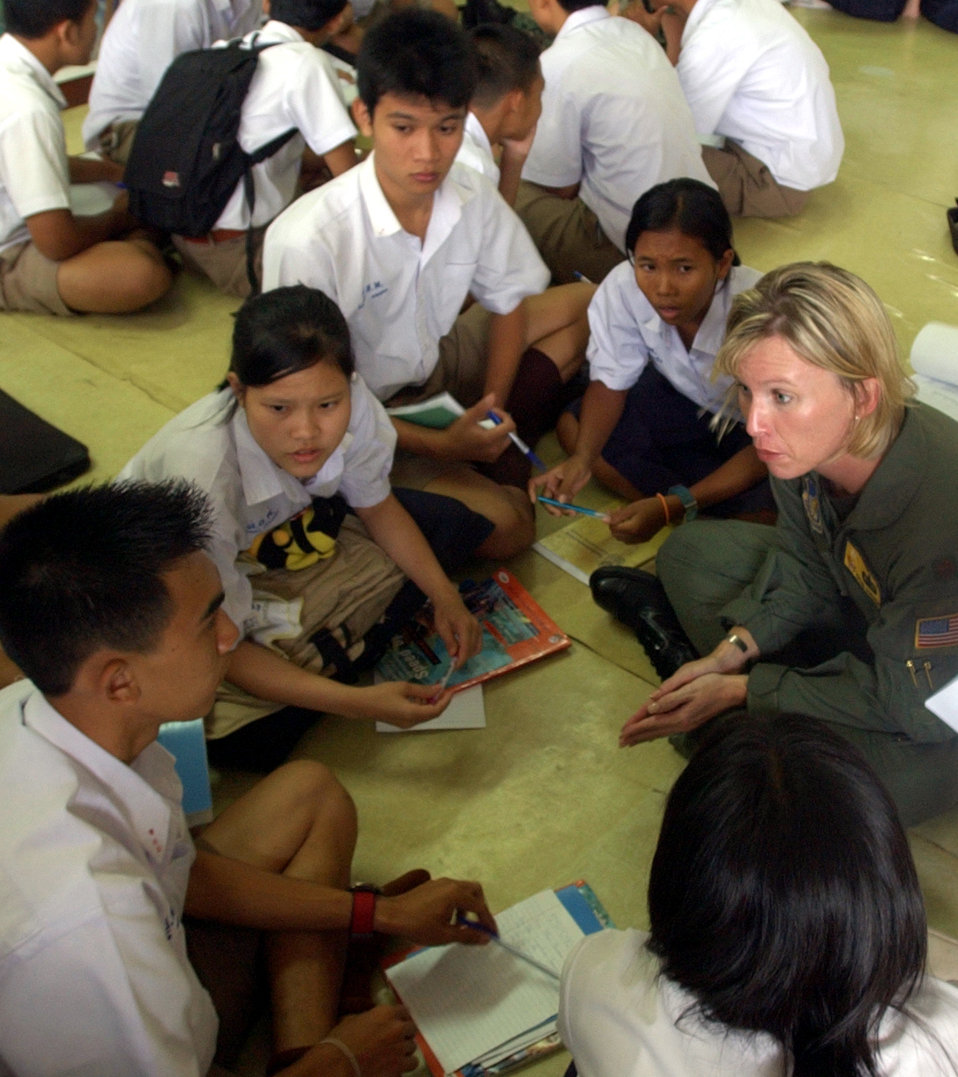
Americans teach Thai teenagers English

KORAT, Thailand -- Maj. Tiffani Donahue speaks with Thai 12th-graders during an English class she gave at a local school May 21 while here for Cobra Gold 04. Cobra Gold is an exercise designed to improve U.S., Thai, Singaporean, Mongolian and Filipino combined readiness and interoperability, enhance security relationships and demonstrate U.S. resolve in the region. Major Donahue is assigned to the 13th Air Force at Andersen Air Force Base, Guam.